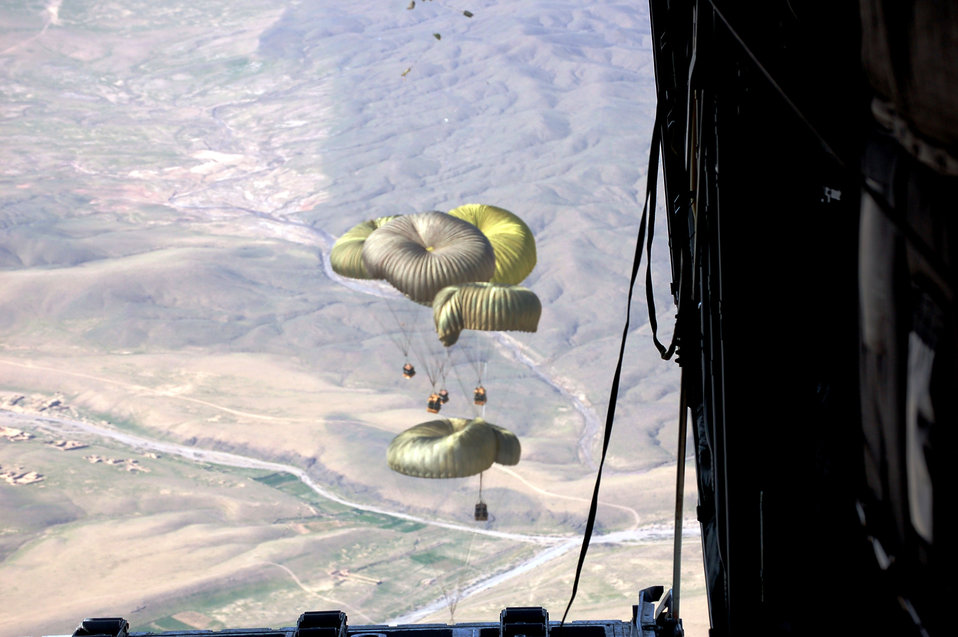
Emergency airdrop over Afghanistan sustains combat ops

Six low-velocity chutes deliver 9,000 pounds of emergency fuel resupply to coalition ground forces engaging Taliban extremists March 13 in southern Afghanistan. The resupply landed within 35 meters of the desired drop zone.